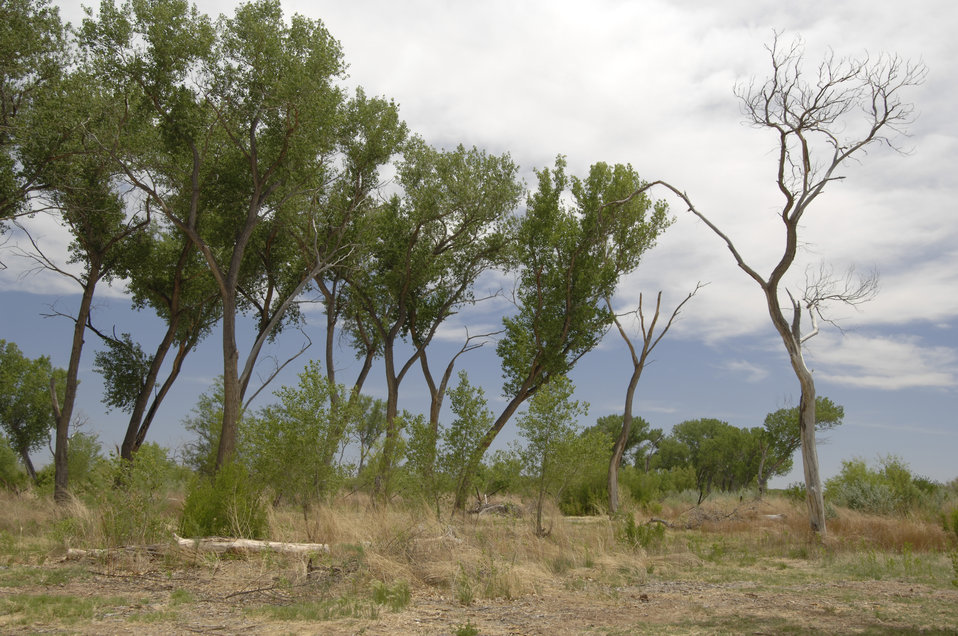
The U.S. Department of Agriculture's (USDA) Cooperative State Research, Education, and Extension Service (CSREES) administers the Rio Grande Basin Initiative (RGBI) in New Mexico in cooperation with the Texas AgriLife Extension Service, Texas AgriLife Research, the College of Agriculture and Life Sciences at Texas A&M University, and New Mexico State University on June 2, 2008. This project addresses water management throughout the Rio Grande Basin, bringing together research, extension, and education efforts to address local, state, regional, national, and international water concerns. Unlike the cement-lined canals that prevent leeching, the earthen acequias allow seepage into groundwater. Acequias are the traditional irrigation ditches or canals in New Mexico. Research has found that the seepage is not wasted but has an added benefit to the environment. The seepage promotes riparian buffers, cleaner groundwater and a more efficient storage of water.